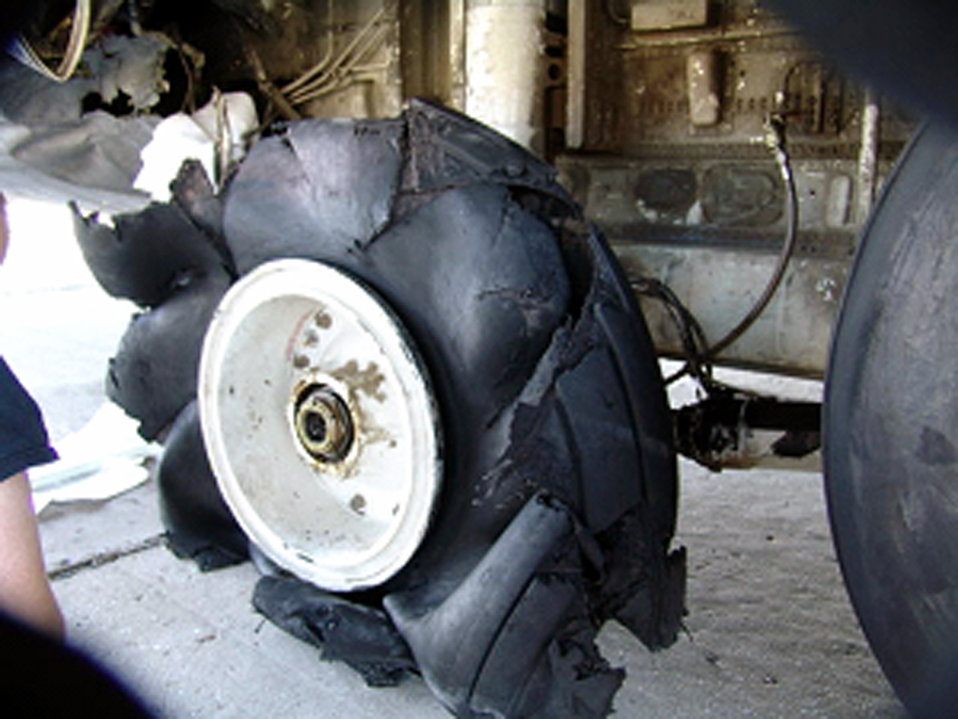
C-130 maintainers accomplish 'in-field' depot maintenance

BAGRAM AIR BASE, Afghanistan -- The damaged tire of a C-130 Hercules assigned to the 774th Expeditionary Airlift Squadron at Karshi-Khanabad Air Base, Uzbekistan, is shown after landing here April 4.